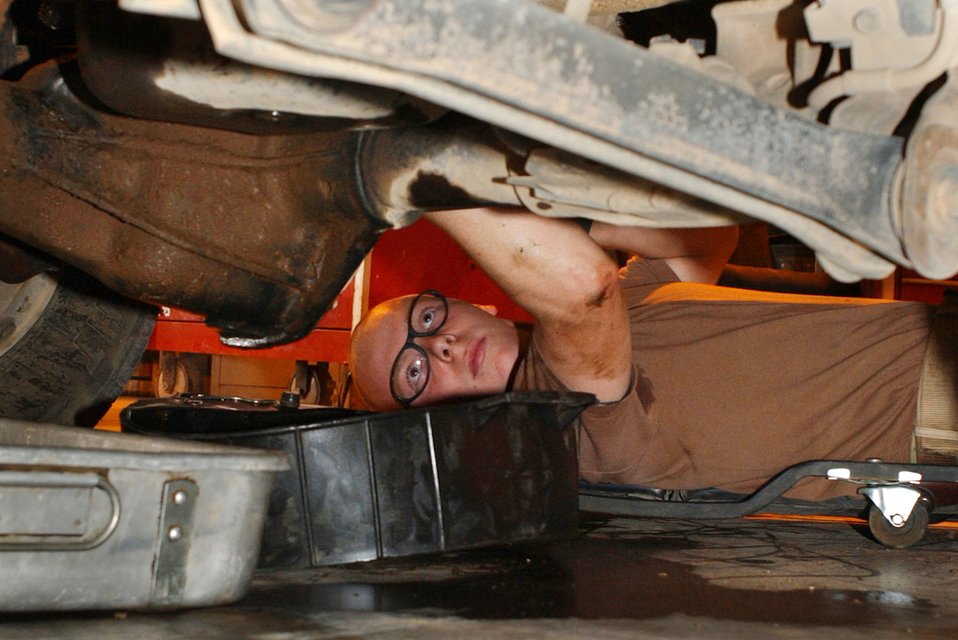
Inner axle seal

BALAD AIR BASE, Iraq -- Senior Airman Brad Mahoney, 332nd Expeditionary Logistics Readiness Squadron, changes an inner axle seal Tuesday.